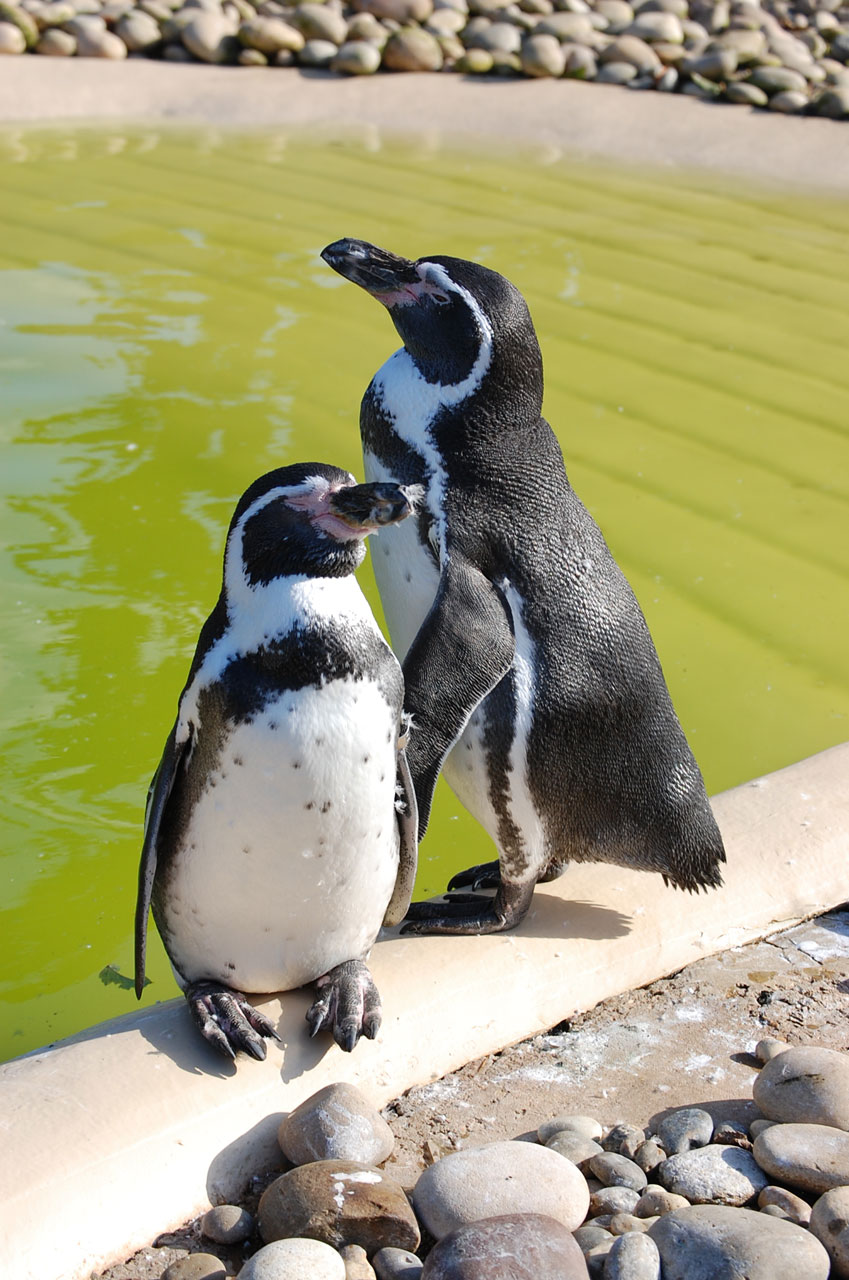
Penguin at the zoo.